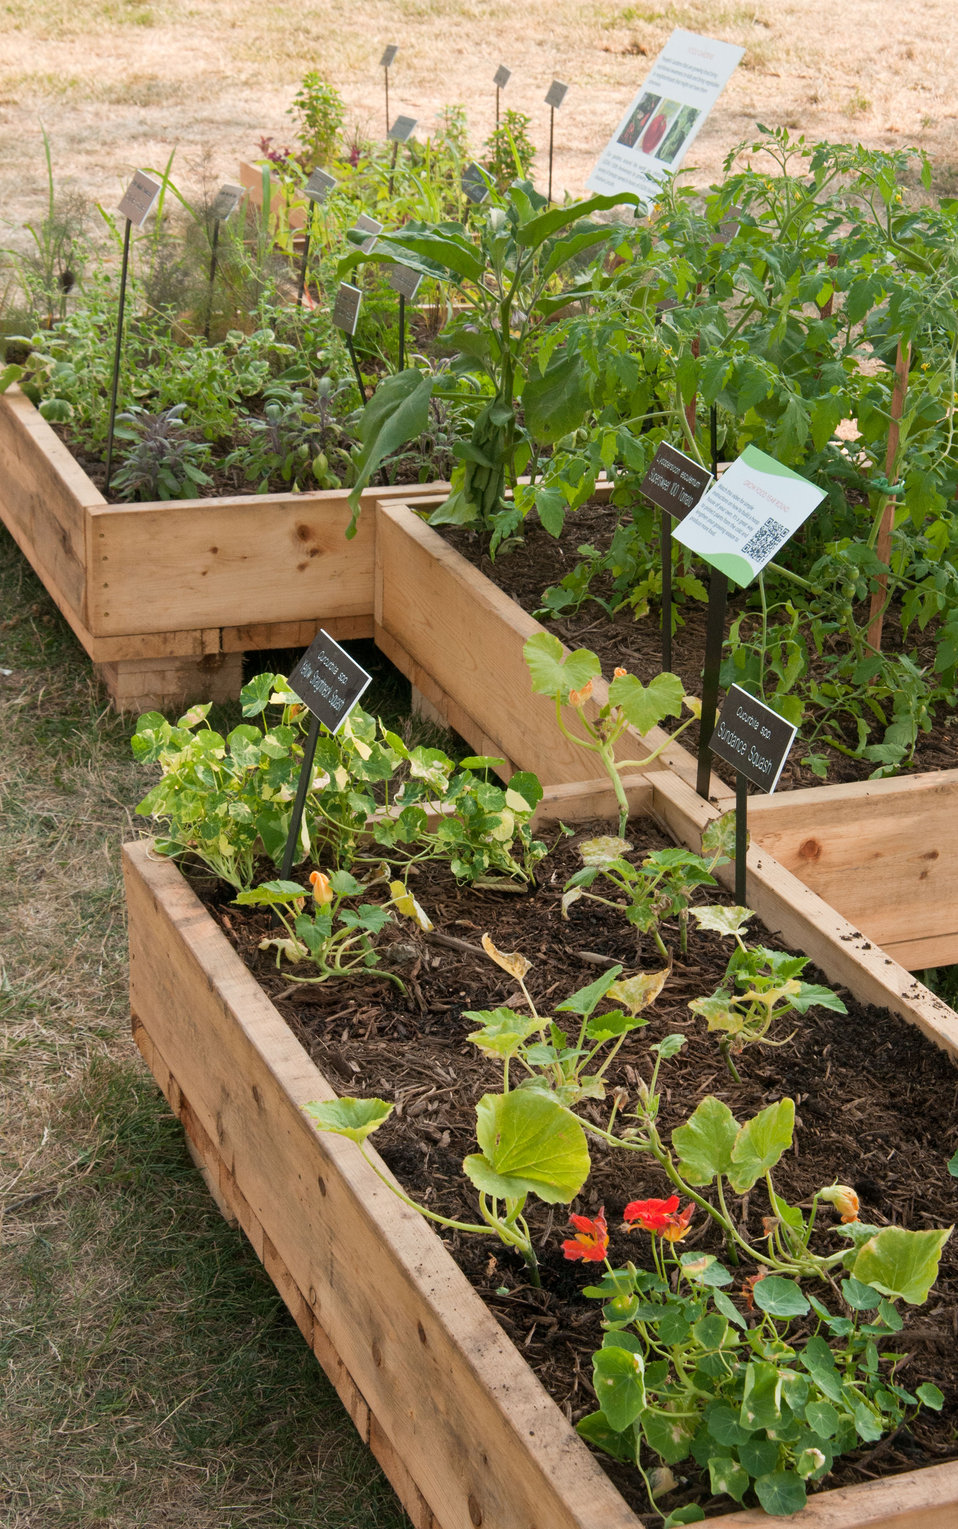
U.S. Department of Agriculture (USDA), People’s Garden Initiative incorporate and display sustainable practices that nurture, maintain and protect the environment at this living exhibit, during the 2012 Smithsonian Folklife Festival, on the National Mall in Washington, D.C., on Thursday, June 28, 2012. Gardens as small as these bring nutritional and food source awareness to kids and fresh fruits and vegetables to neighborhoods that might not have them otherwise. One of the three themes this year is “Campus and Community.” It celebrates the 150 years of the USDA and the Land-Grant University System. The U.S. Department of Agriculture (USDA) and the Land-Grant system extend education across the country, contributing to American agriculture success and rural prosperity. “Campus and Community” has demonstrations, discussions, hands-on activities, and entertainment to that showcase the many ways that this partnership works to improve American agriculture and rural life.